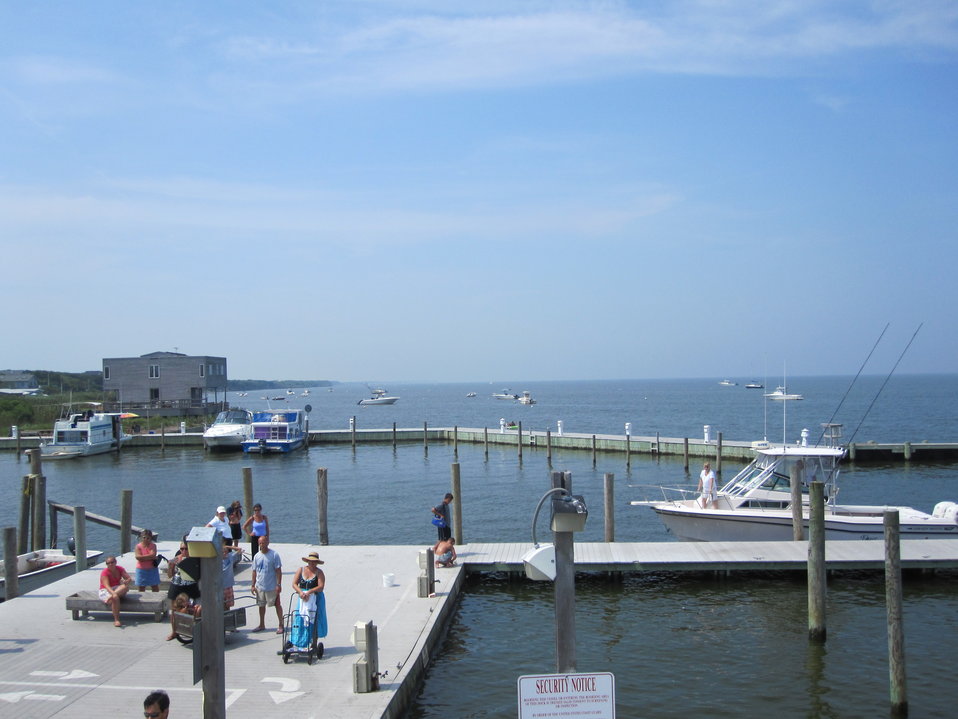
Davis Park Ferry pier photo by ... Stevan Licensing: Category:Images of Fire Island